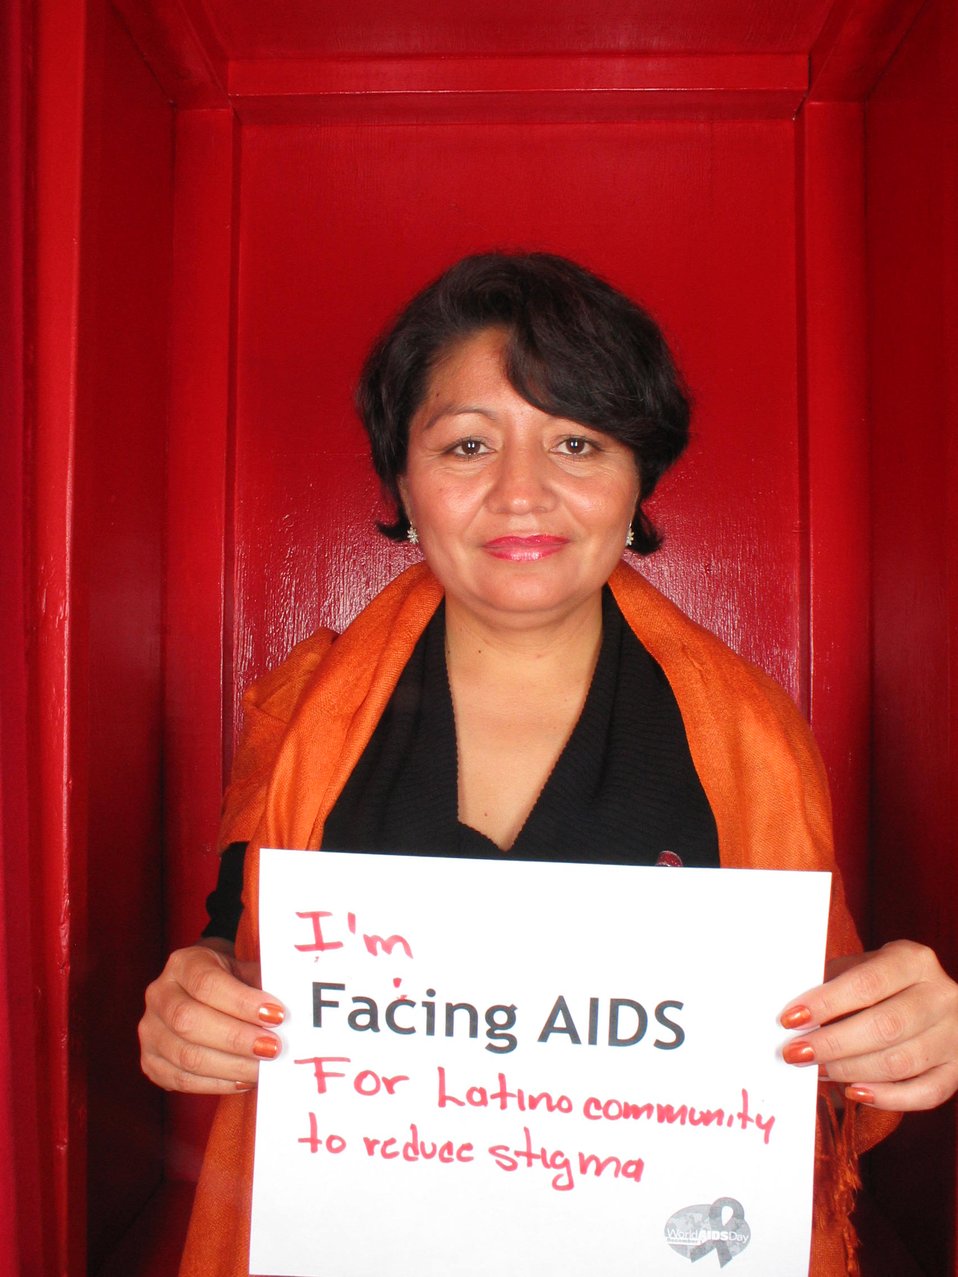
I'm Facing AIDS for Latino communities to reduce stigma.